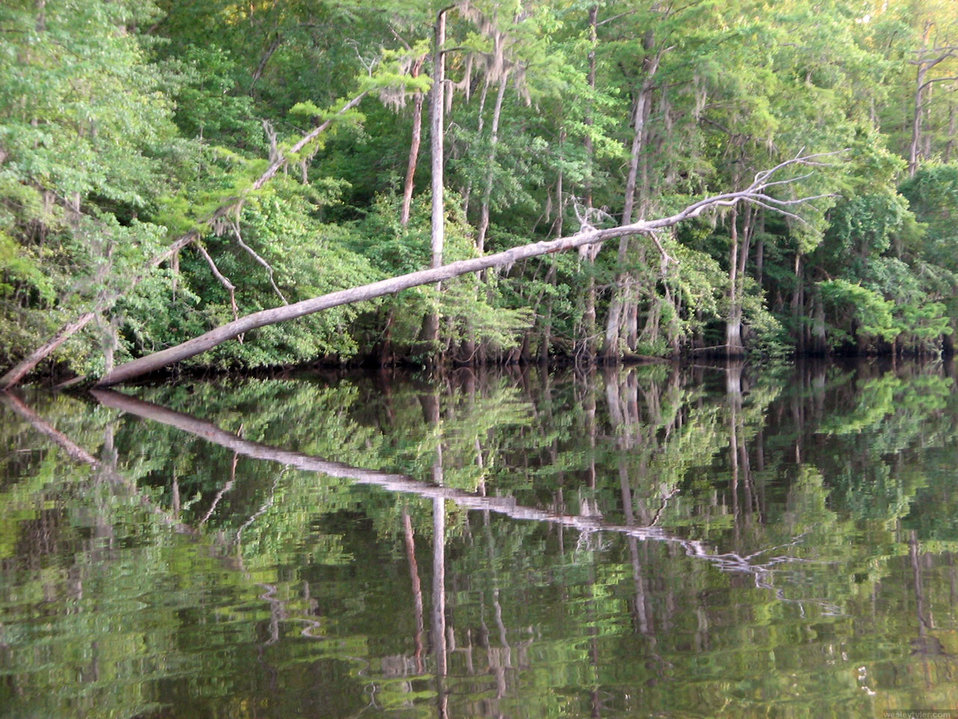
Lynches river

Taken on the lynches river in south carolina.